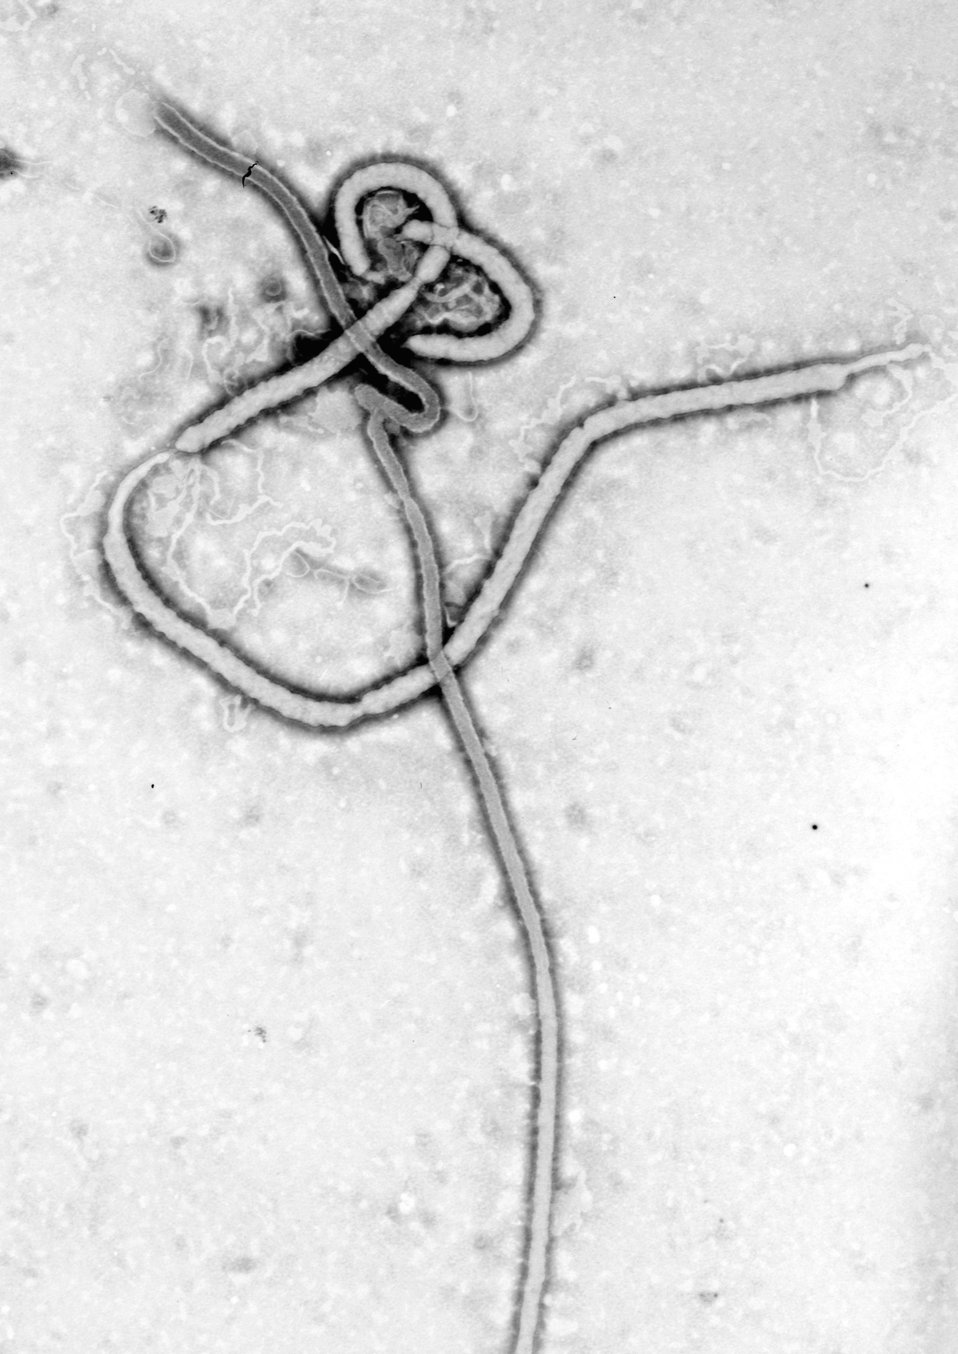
Created by CDC microbiologist Frederick A. Murphy, this transmission electron micrograph (TEM) revealed some of the ultrastructural morphology displayed by an Ebola virus virion.